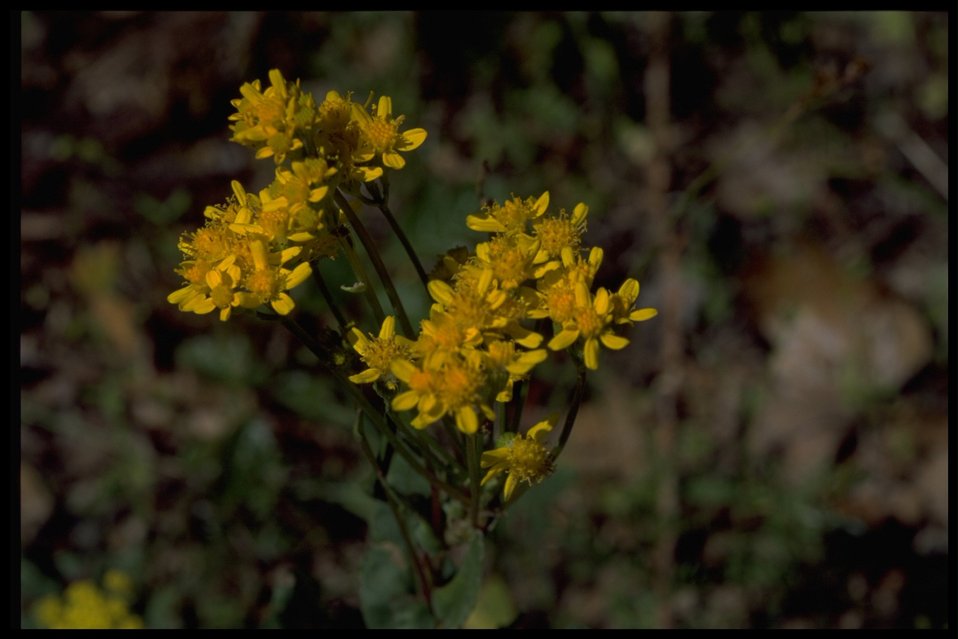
Closeup shot of Senecio integerimus.